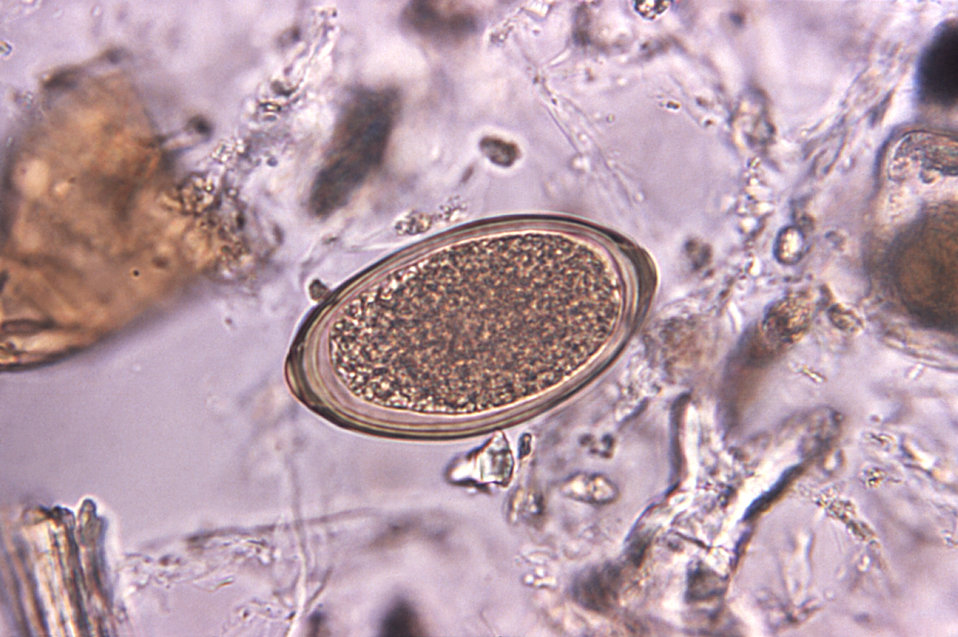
Magnified 500X, this photomicrograph of an unstained, formalin-preserved stool specimen mount, revealed the presence of a Trichuris vulpis nematode egg. T. vulpis is a 'whipworm' that is common to dogs.